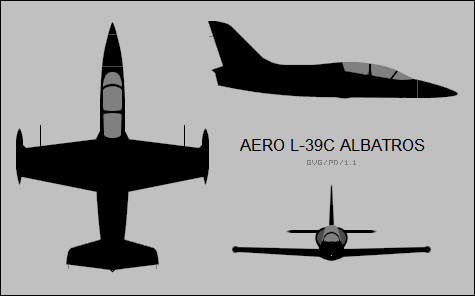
3-view silhouettes of the Aero L-39C Albatros